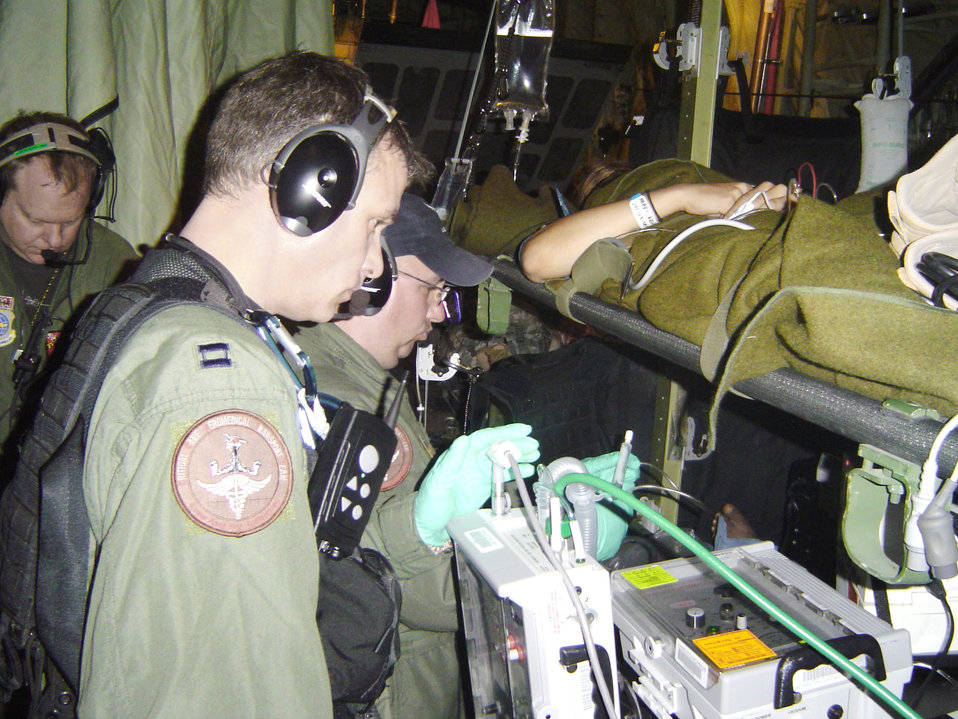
Keesler medical teams aid Haiti relief efforts

Capt. John Michael Fowler (second from left) and Tech. Sgt. Rich Pakula (center) provides in-flight patient care aboard a C-130 Hercules Feb. 7, 2010. Keesler Air Force Base, Miss., critical care air transport teams provided medical care to victims of the Haiti earthquake who were airlifted to hospitals in the United States. Captain Fowler is an 81st Medical Group critical care nurse, and Sergeant Pakula is an 81st Medical Group respiratory therapist. Stephen Boskovich)